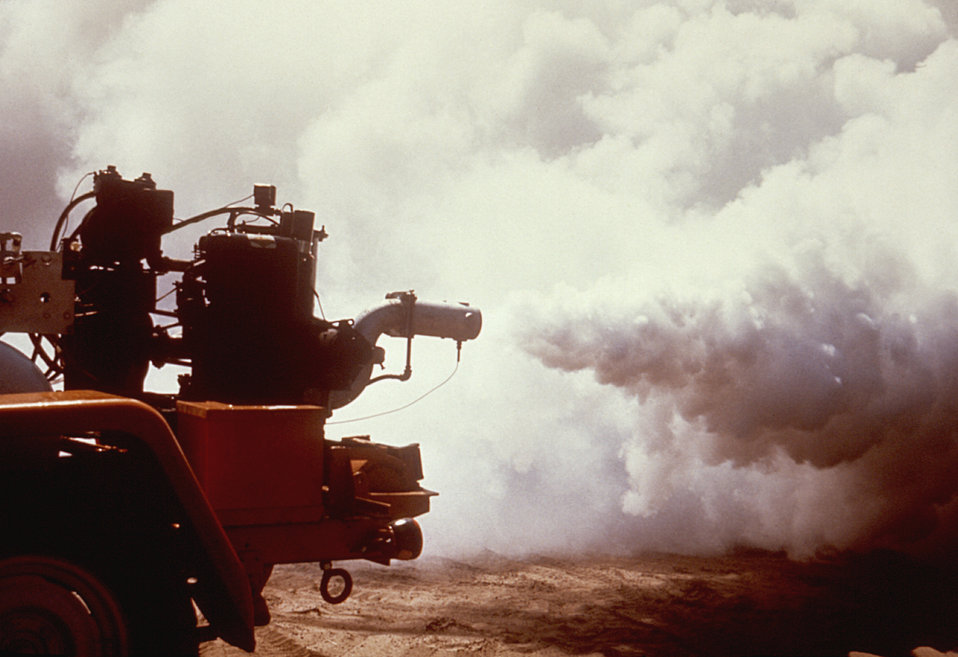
This 1981 photograph depicts an operating older model Todd insecticidal fog applicator (TIFA) thermal fogger, being demonstrated as it delivers a high volume of fog into the environment.